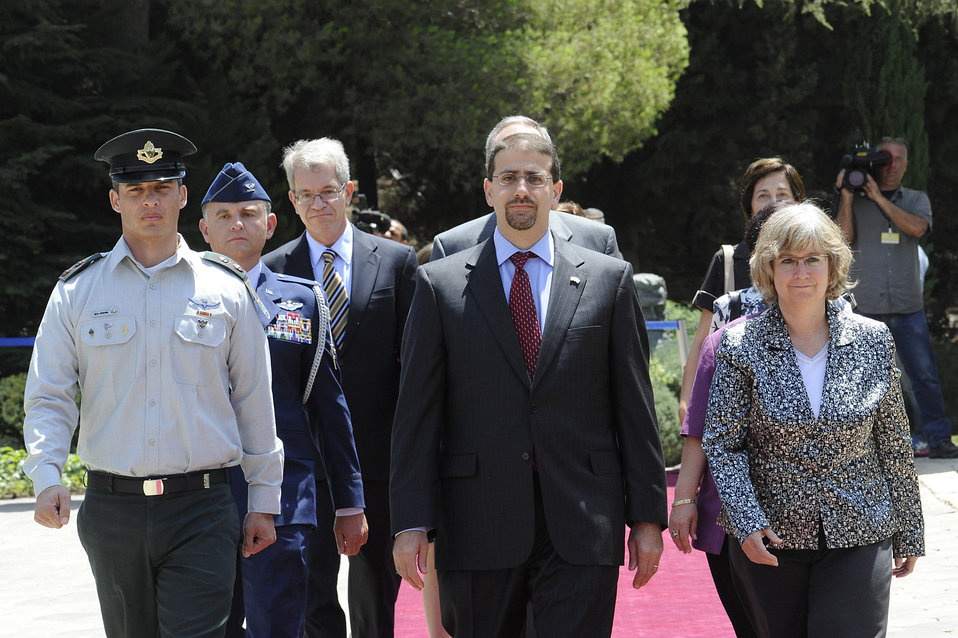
Ambassador Shapiro Prepares To Present His Credentials

U.S. Ambassador to Israel Daniel B. Shapiro prepares to present his credentials to Israeli President Shimon Peres at the President's residence in Jerusalem on August 3, 2011.